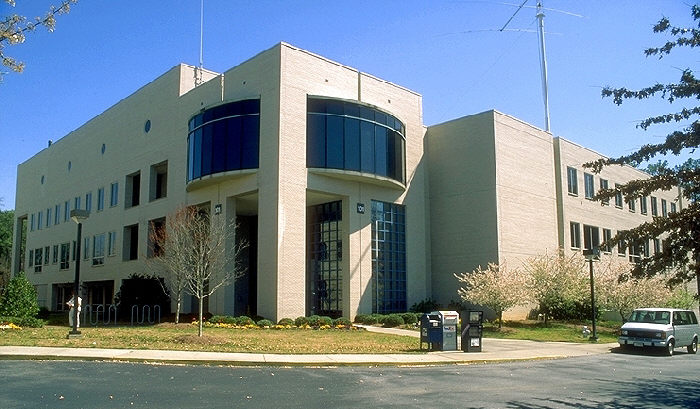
Captured in March, 1999, this image depicts Building 101, located on the Centers for Disease Control's (CDC) Chamblee Campus, in metropolitan Atlanta, Georgia.